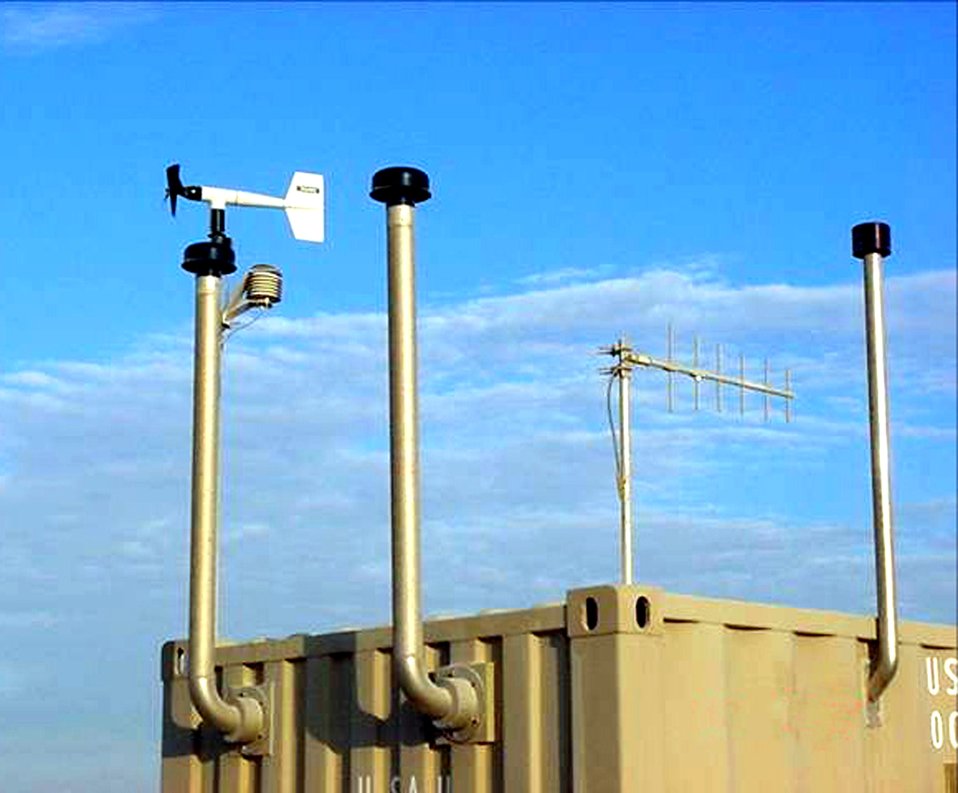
WMD shield keeps Airmen safe

Sensors on one of the Portal Shield cases monitor the air near this deployed location housing 380th Air Expeditionary Wing Airmen in Southwest Asia.